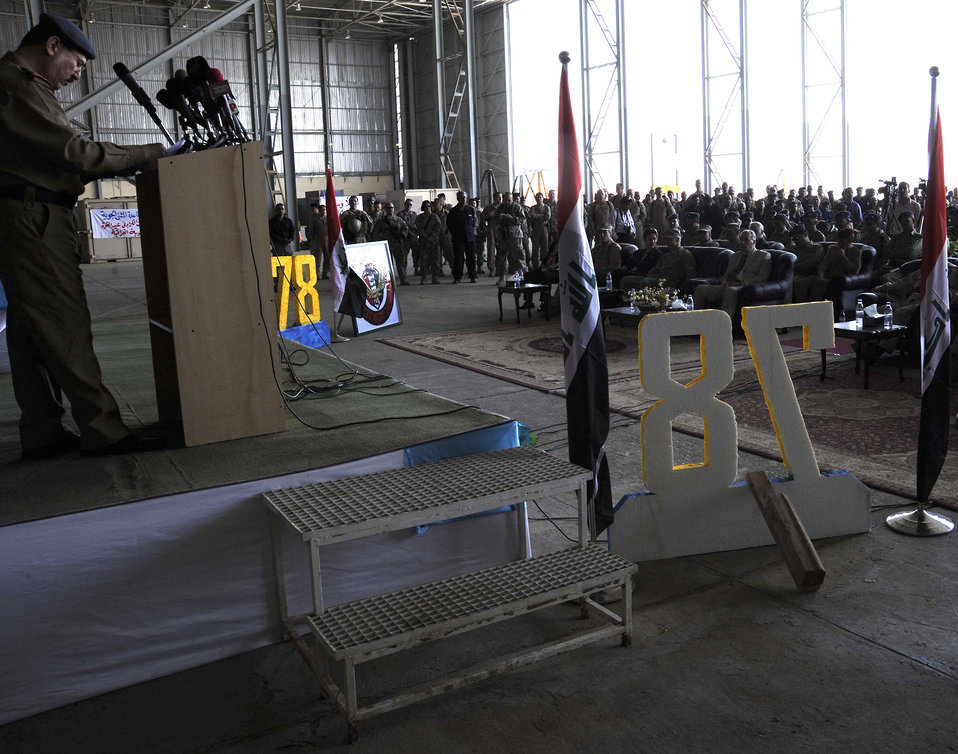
Iraqis celebrate 78th annual Air Day

Airmen and Iraqi military members attend the 78th annual Iraqi Air Day April 22 at New al-Muthana Air Base, Iraq. Iraqi officials spoke to the large crowd on how far the Iraqi air force has come in the past few years. There were also static displays of Iraqi aircraft on display.